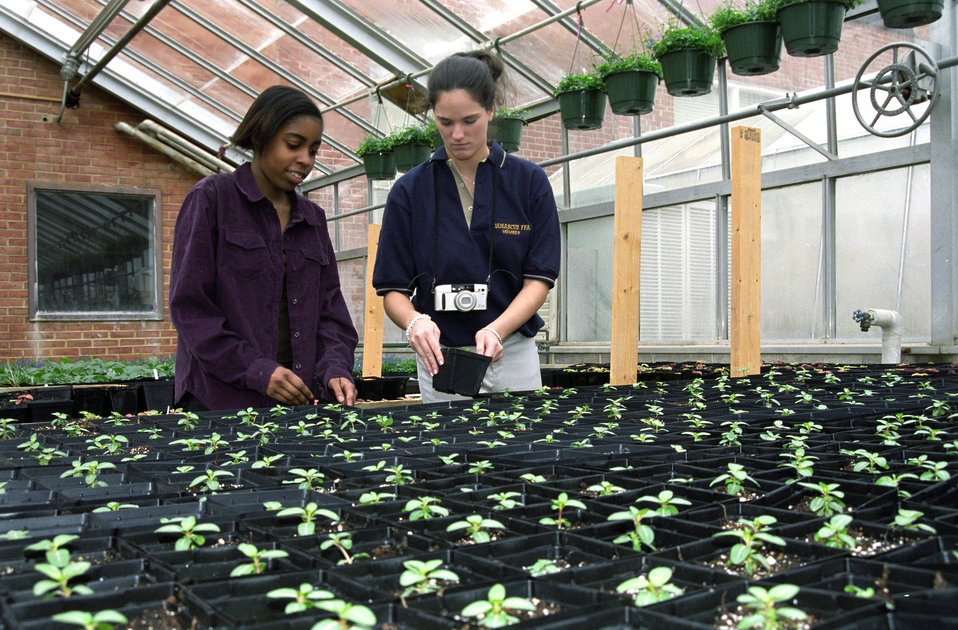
FFA students at Damascus High School work in the school’s greenhouse as part of the U.S. Department of Agriculture’s (USDA) National Institute of Food and Agriculture’s (NIFA) Agriculture in the Classroom Program (AITC) in Damascus, MD on March 21, 2003. Agriculture and education have been related for much of our nation's history because most Americans lived on farms or in small towns, students often did farm chores before and after school. Old schoolbooks have numerous agricultural references. As the farming population began to decline, agricultural emphasis decreased in educational materials as well. A core group of educators and agriculturalists pushed for more youth education about agriculture. They recognized the interlocking role of farming, food and fiber production, nutrition, environmental quality, wildlife habitat, clean water, and preservation of forests.